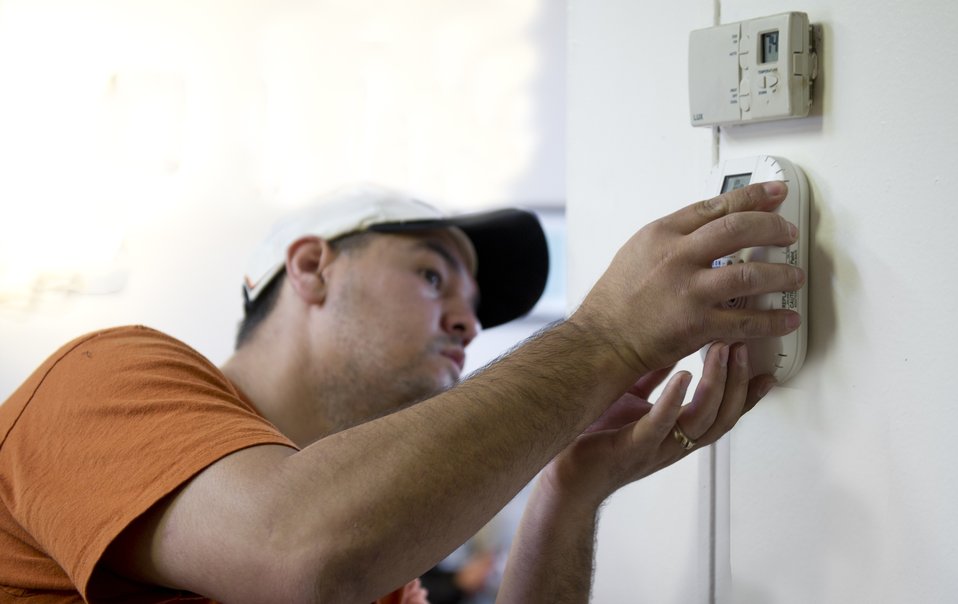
A homeowner installing a programable thermostat a part of an Energy Department program that assists homeowners weatherize their homes.